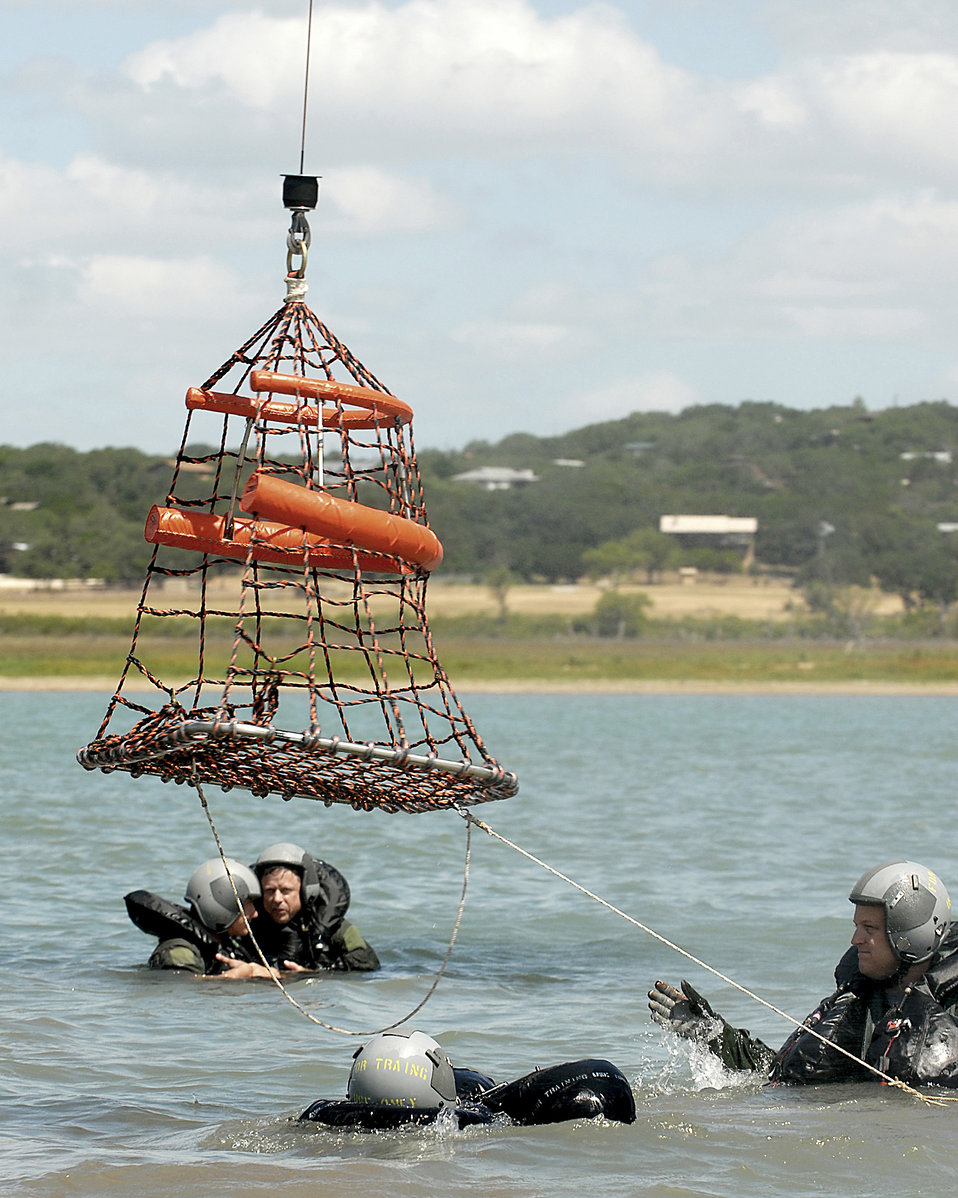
Air Guard flight crews undergo water survival training

Lt. Col. Michael McCoy (right), an F-16 Fighting Falcon pilot, guides an aerial rescue basket to others participating in water survival training July 11 at Canyon Lake, Texas. He is assigned to the Texas Air National Guard's 149th Fighter Wing at Lackland Air Force Base, Texas.